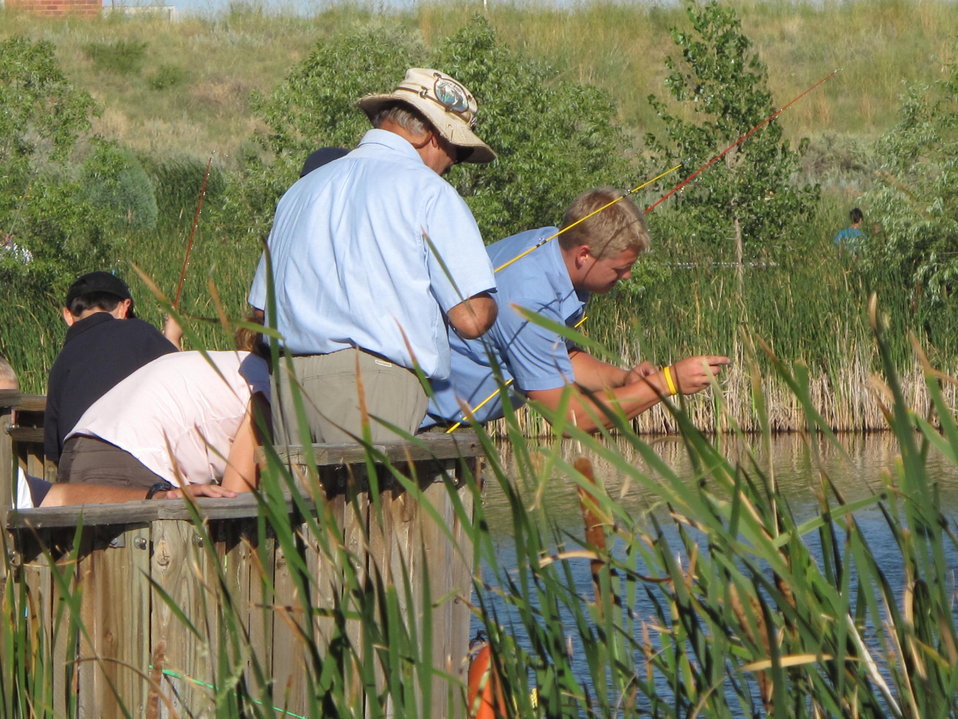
ELK fishing trip to RM Arsenal